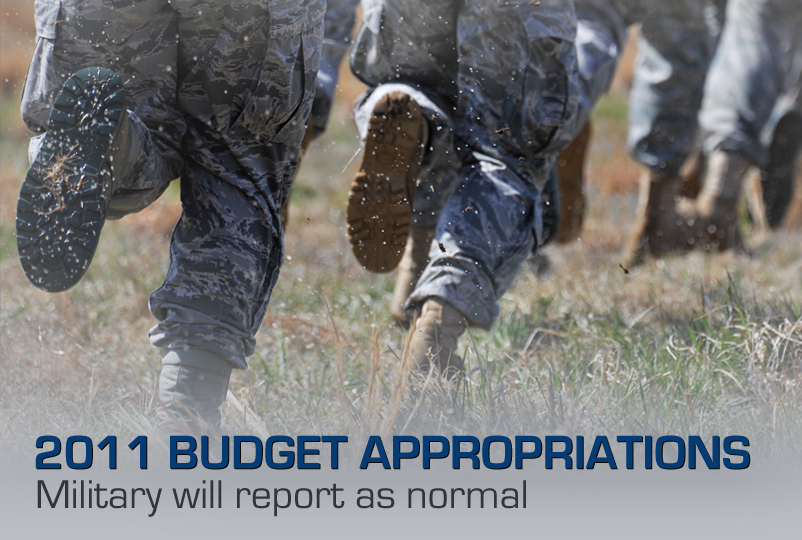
2011 Budget Appropriations